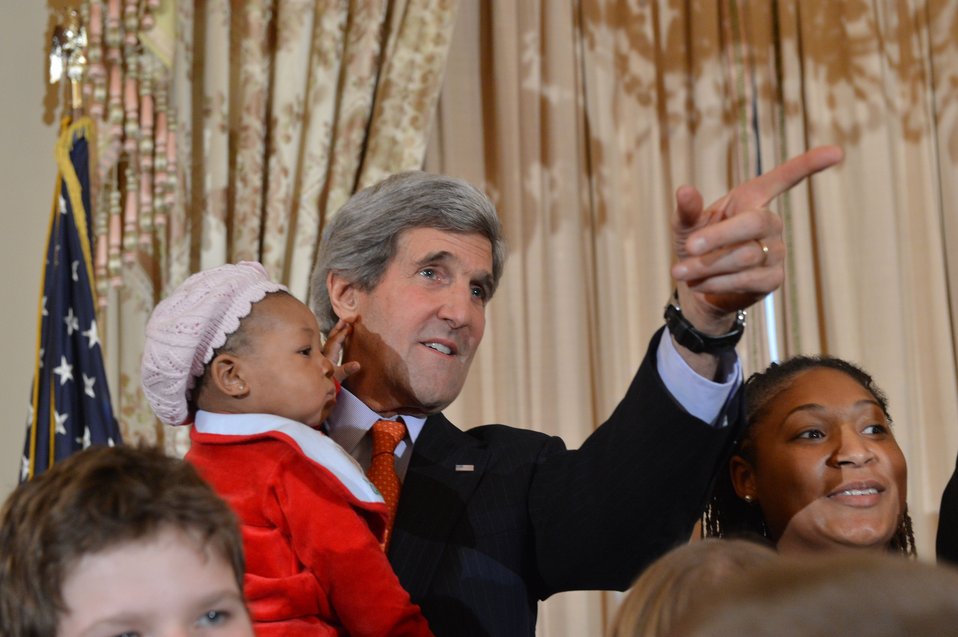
Secretary Kerry Hosts the Unaccompanied Tour Families Holiday Reception

U.S. Secretary of State John Kerry hosts the Unaccompanied Tour Families Holiday Reception at the U.S. Department of State in Washington, D.C., on January 7, 2013.